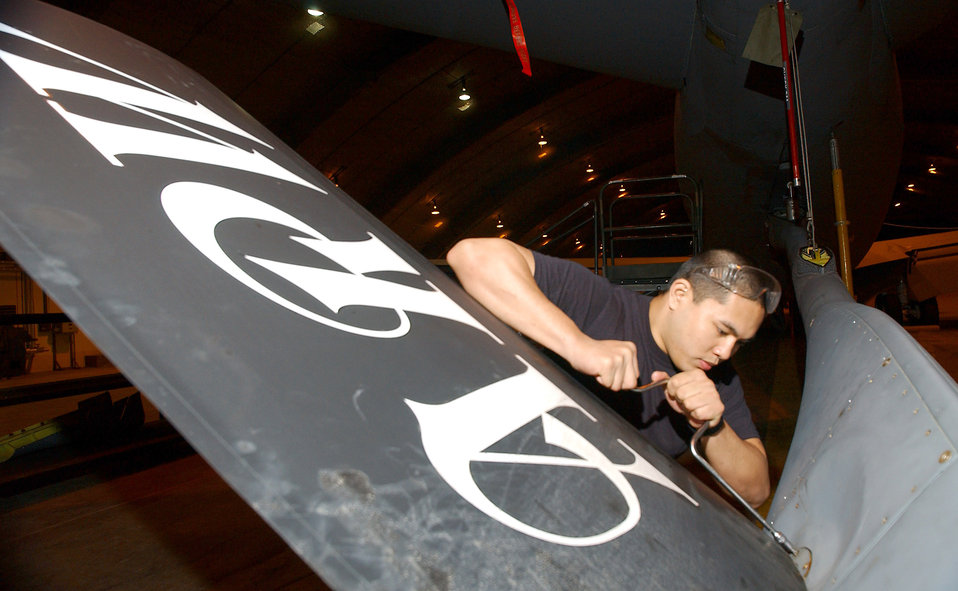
Boom inspector

ROYAL AIR FORCE FAIRFORD, England -- Airman 1st Class Daniel Dela Cruz removes the ruddavaters from the boom of a KC-135 Stratotanker prior to an inspection here May 19. Airman Cruz is a crew chief with the 100th Maintenance Squadron at Royal Air Force Mildenhall, England.